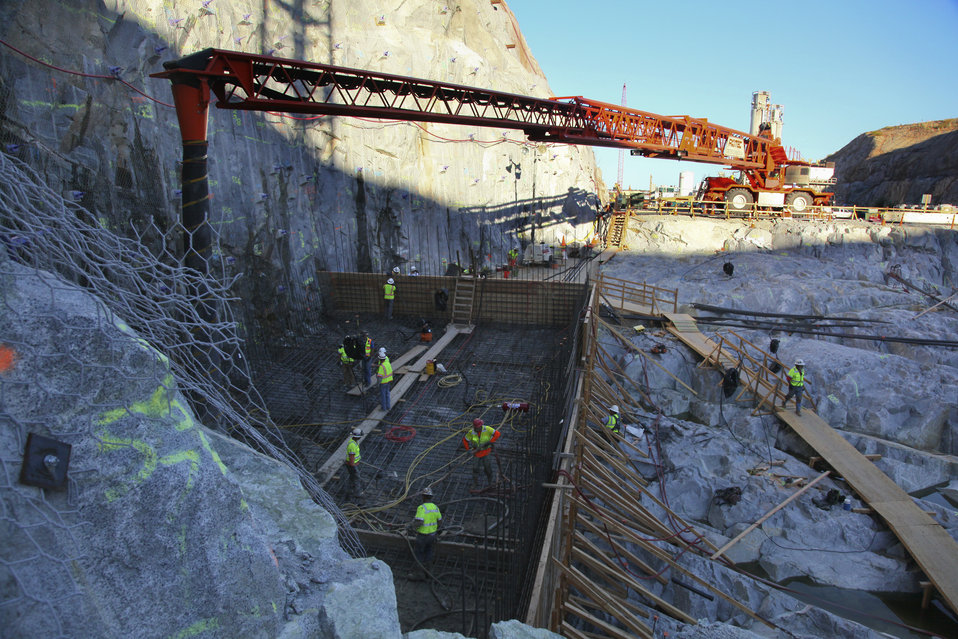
Concrete Placement at the Folsom Dam auxiliary spillway construction

Contractors for the U.S. Army Corps of Engineers Sacramento District use an onsite batch plant and a series of conveyors (top right) for concrete placement at the auxiliary spillway at the Folsom Dam Joint Federal Project in Folsom, Calif., June 7, 2012. The Folsom Dam Joint Federal Project is a joint effort of the Corps, U. S. Bureau of Reclamation, the Central Valley Flood Protection Board and the Sacramento Area Flood Control Agency to improve the safety of the current dam and reduce flood risk for the greater Sacramento area.